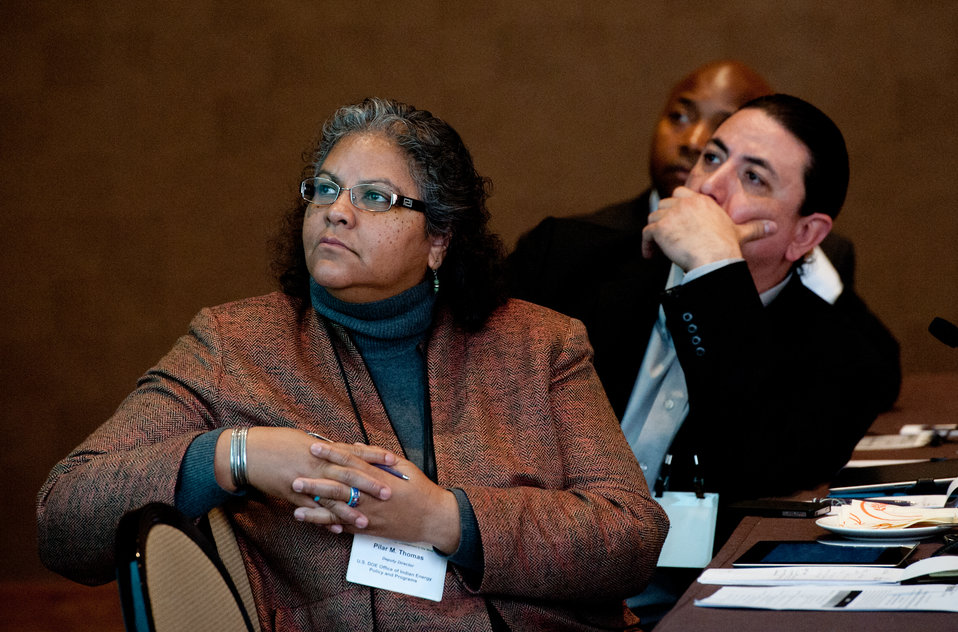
Indian Transmission Forum

February 7, 2012 - DOE Office of Indian Energy Director Tracey LeBeau speaks at the Tribal Leader Energy Forum on transmission held February 2012 in Denver, Colorado.